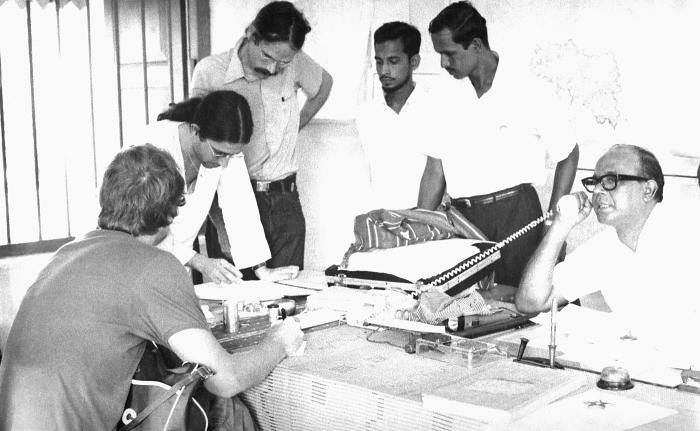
One of the District Teams was shown here in this 1975 image as they were discussing how to most efficiently deploy the smallpox eradication campaign's limited resources throughout one of the country's districts. Gathered around the table were epidemiologists Dr. Steve Jones (standing with mustache), and Dr. Michael Schwartz, as they were analyzing pertinent inventory documents.